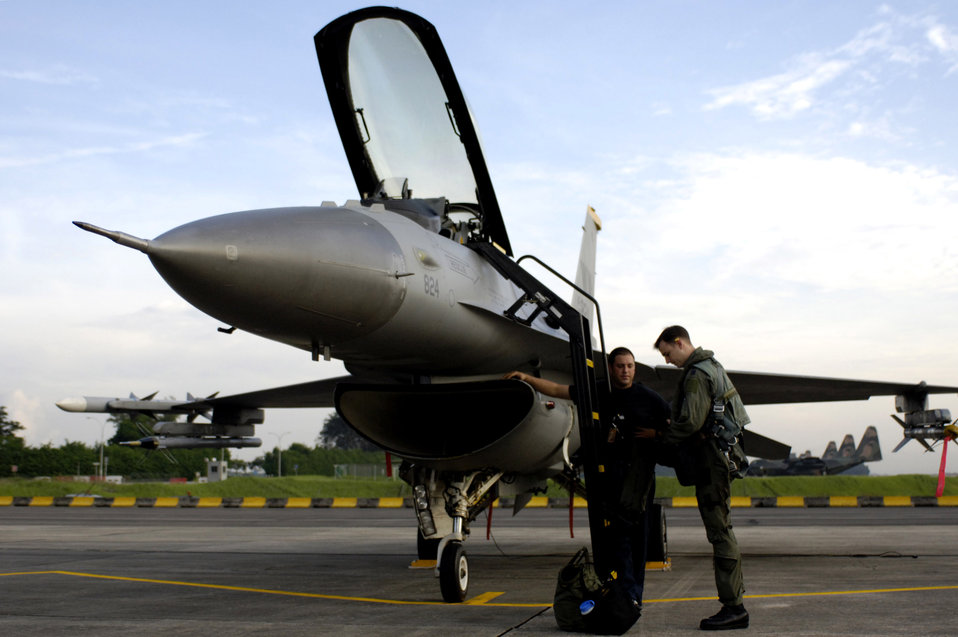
Commando Sling

PAYA LEBAR AIR BASE, Singapore -- Capt. Michael May and Staff Sgt. Keith White look over the maintenance log before a mission here during Exercise Commando Sling. The Airmen are from the 14th Fighter Squadron at Misawa Air Base, Japan.